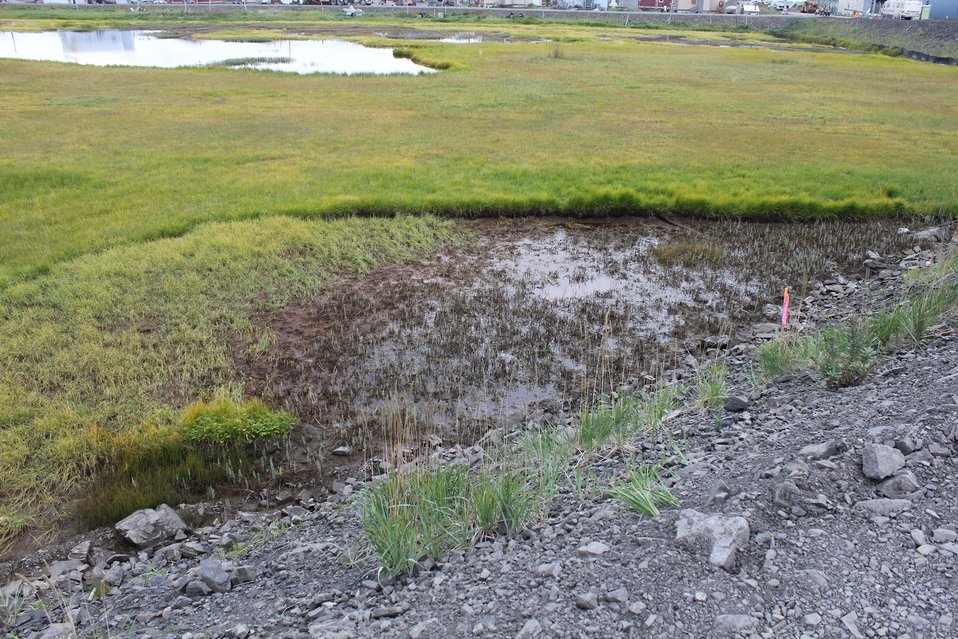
Thermokarst on melting permafrost caused by improper road construction.